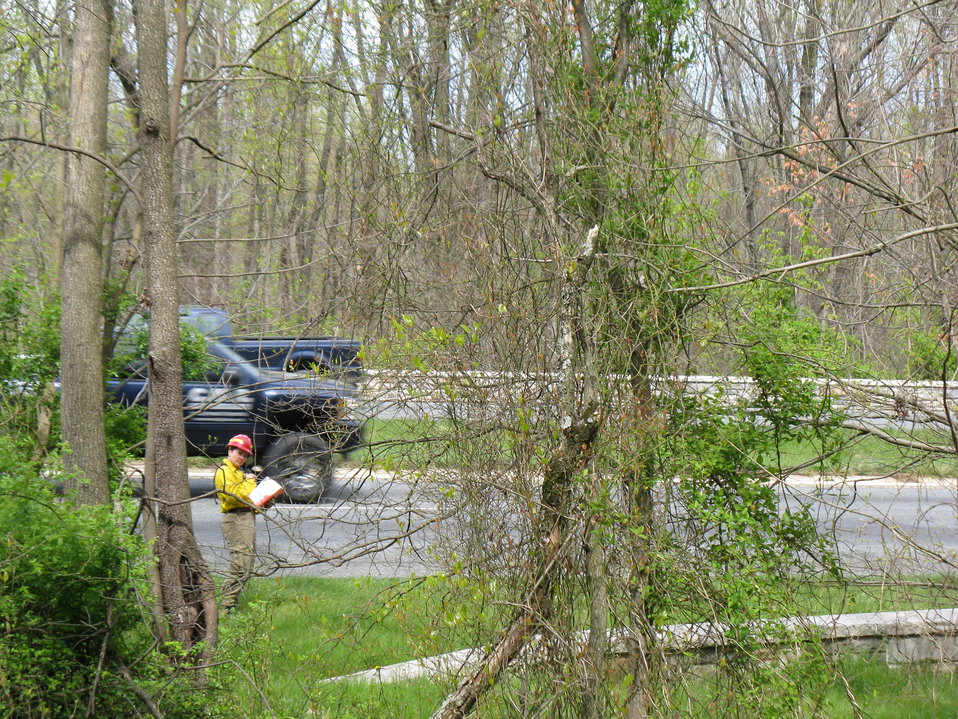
Highway Smoke Monitoring

Laurel, Maryland, April 5, 2012: Northeast Regional Fire Biologist Laura Mitchell of the U.S. Fish and Wildlife Service monitors smoke along Interstate 295 for a controlled burn nearby. The burn was done at Patuxent Research Refuge's Savannah Restoration Unit to increase refuge species and habitat diversity. Specifically, the refuge hoped to increase density and diversity of rare darkling beetles and forest floor plants.